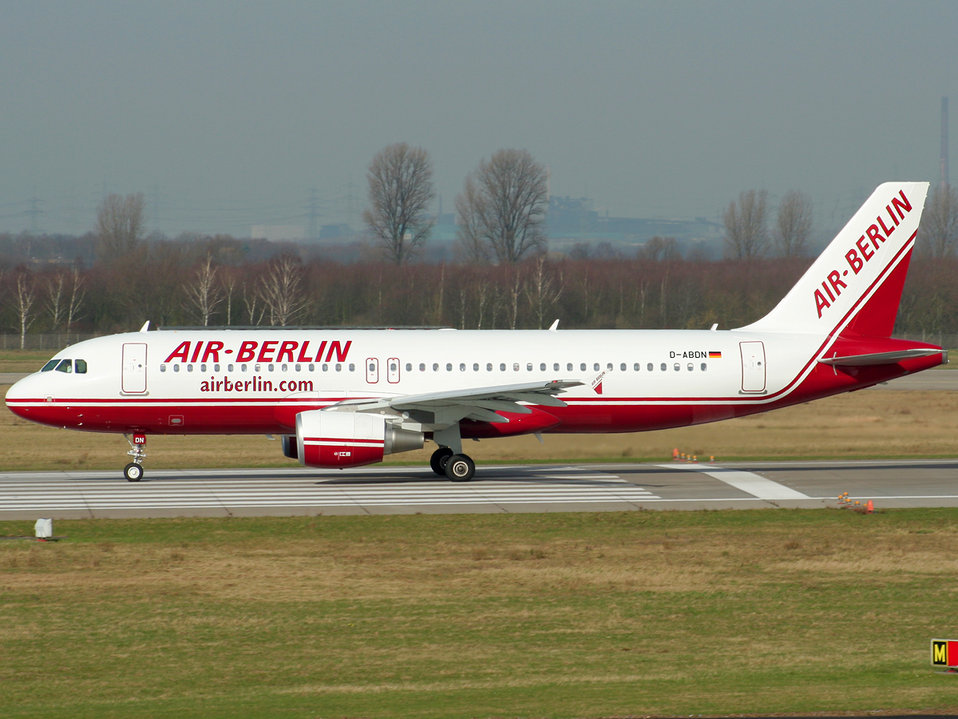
Deutsch: A320 der Air Berlin in DUS